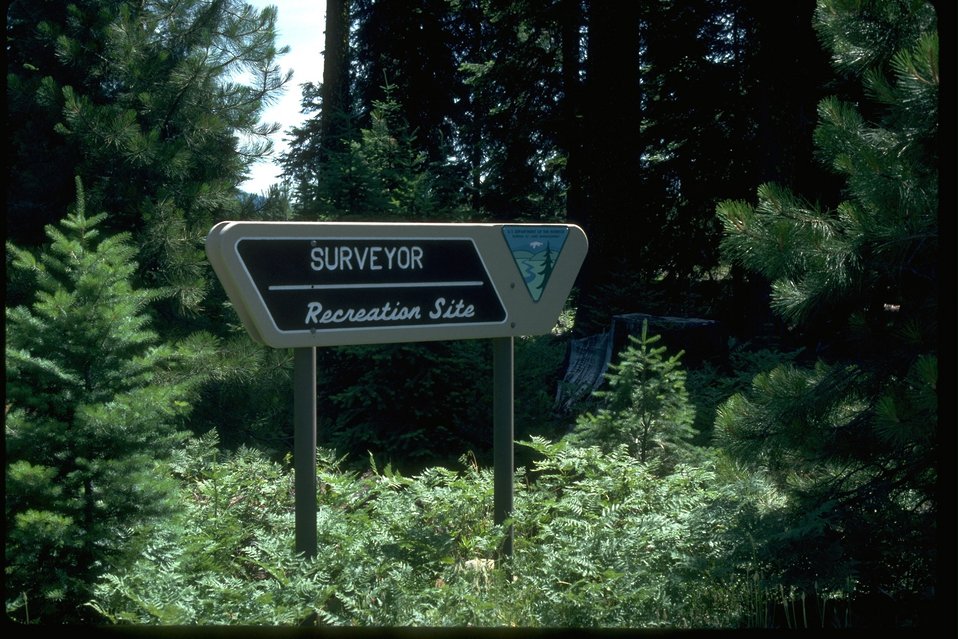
Entry sign at Surveyor.